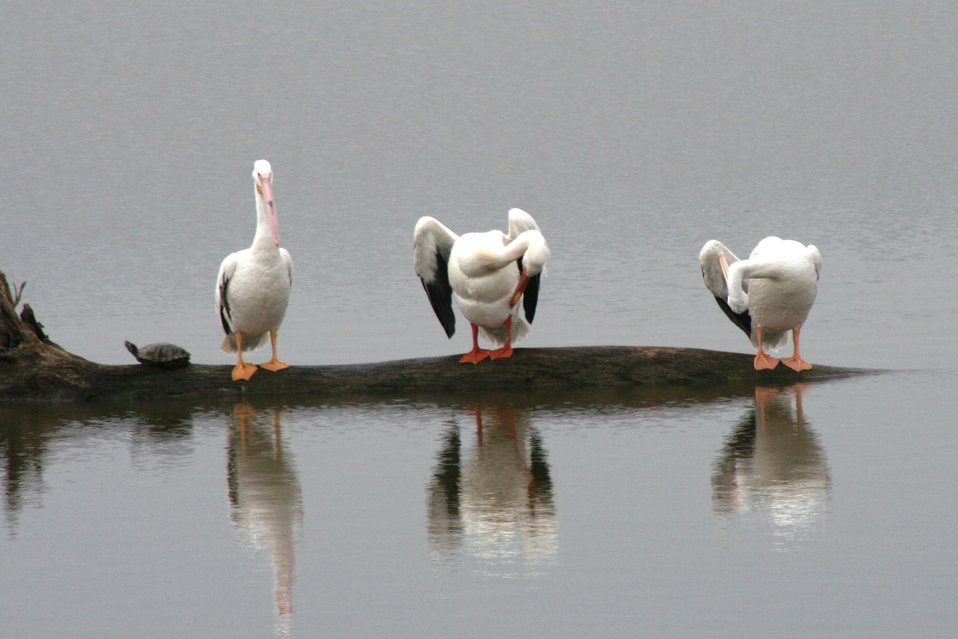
Pelicans Riverlands

Pelicans at Riverlands in West Alton, Missouri.